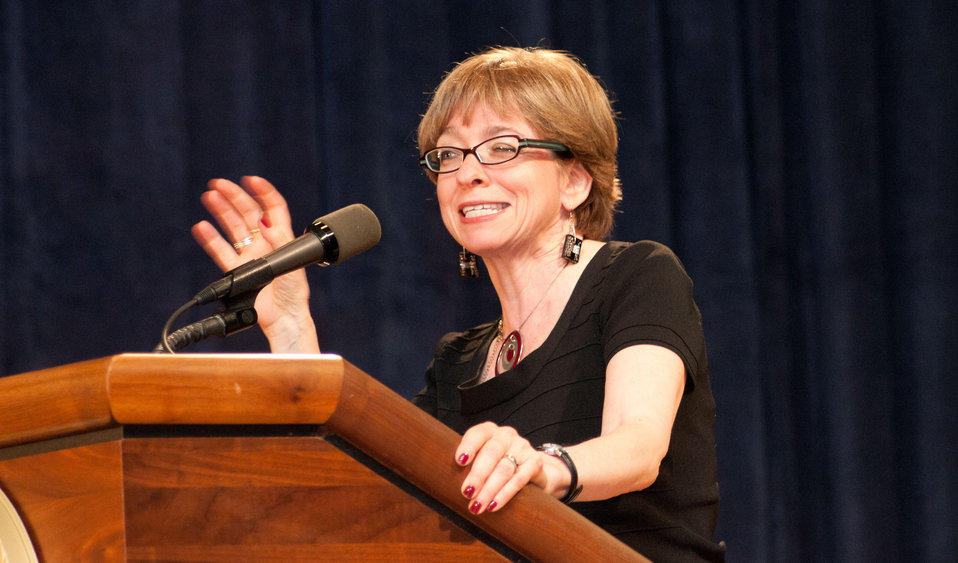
U.S. Equal Employment Opportunity Commission, Commissioner Chai Feldblum was the guest speaker for the U.S. Department of Agriculture (USDA) Lesbian, Gay, Bisexual and Transgender (LGBT) Pride Observance Program in the Jefferson Auditorium, on Thursday, June 2, 2011, in Washington, DC.